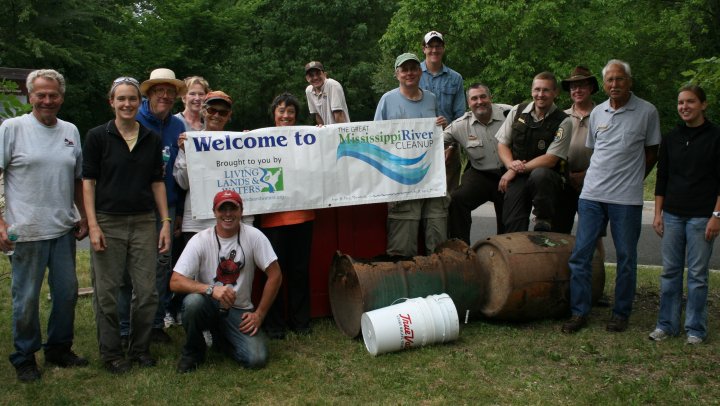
The cleanup crew at McNally Landing

The Volunteers, Friends, Living Lands and Waters staff and Refuge staff who participated in The Great Mississippi River Cleanup from the McNally Boat Landing (Winona, MN).